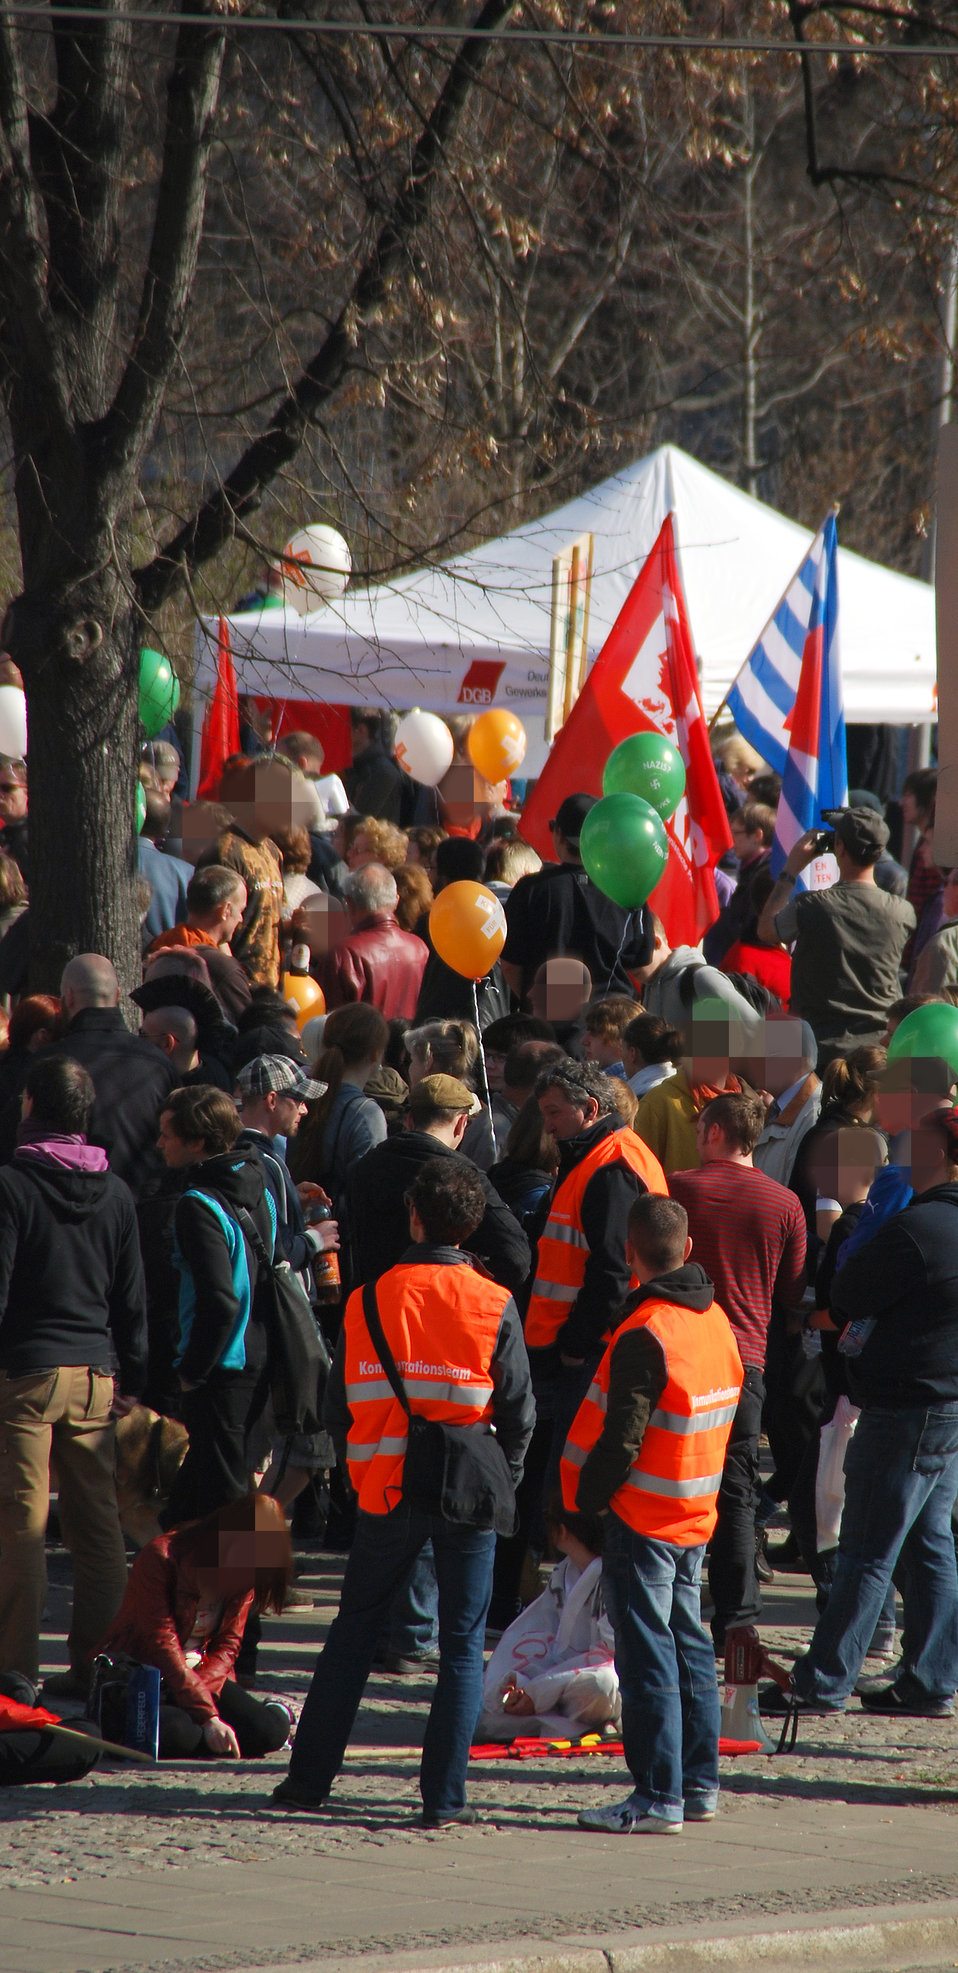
Proteste gegen den Nazi-Aufmarsch am 24.3.2012 in Frankfurt (Oder)